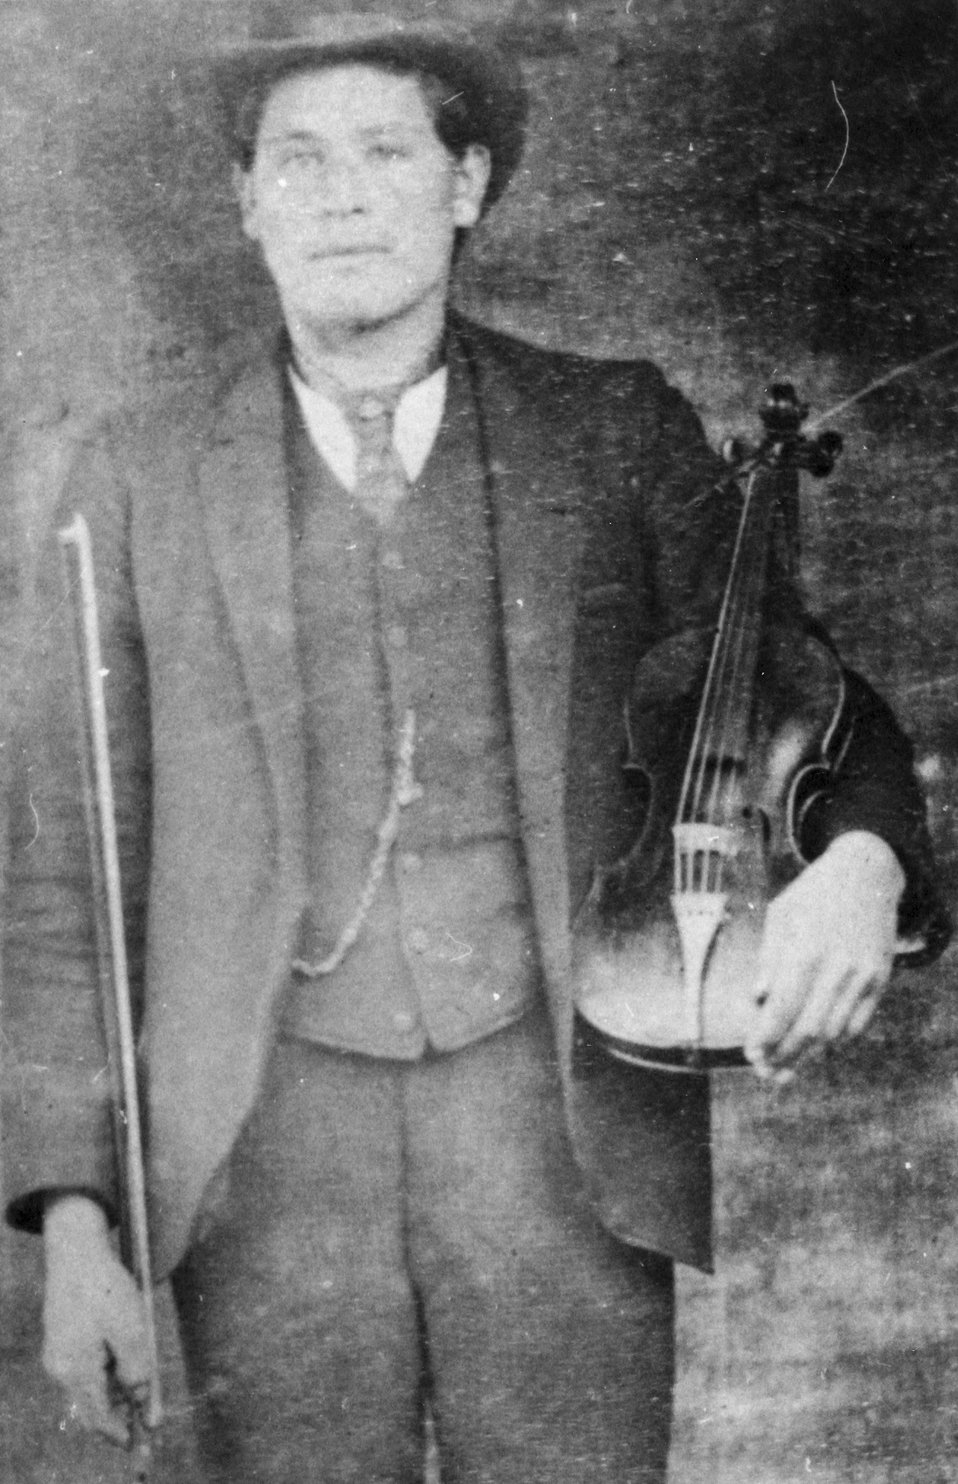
Tom Billings C. 16 years old.